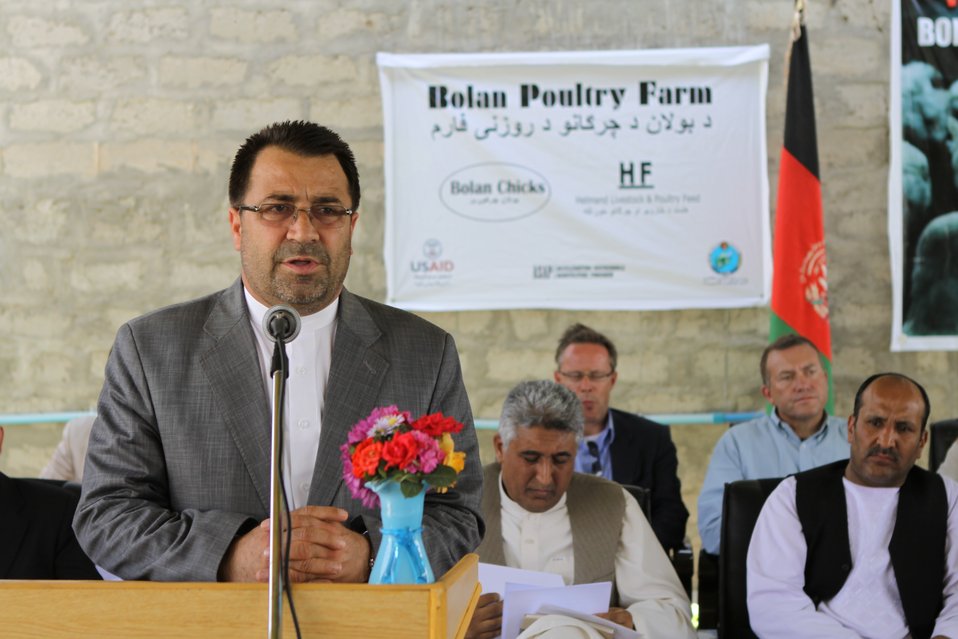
Bolan Poultry Farm